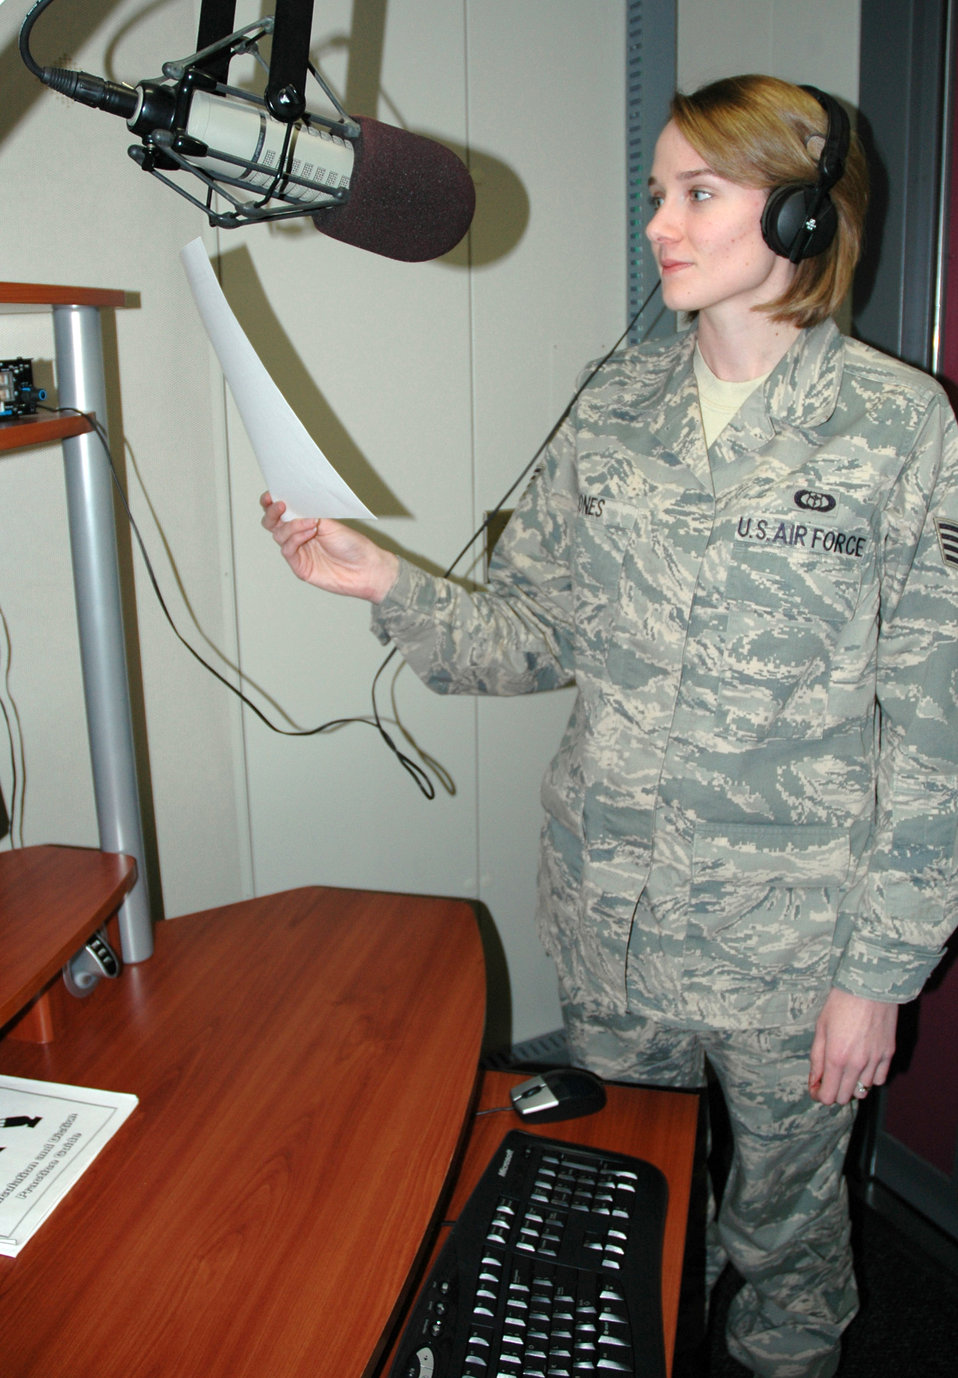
Weather-center forecasts now just a click away

Staff Sgt. Rebecca Jones, a broadcast weather technician with the American Forces Network Weather Center at Offutt Air Force Base, Neb., reads a script for an upcoming AFNWC broadcast.